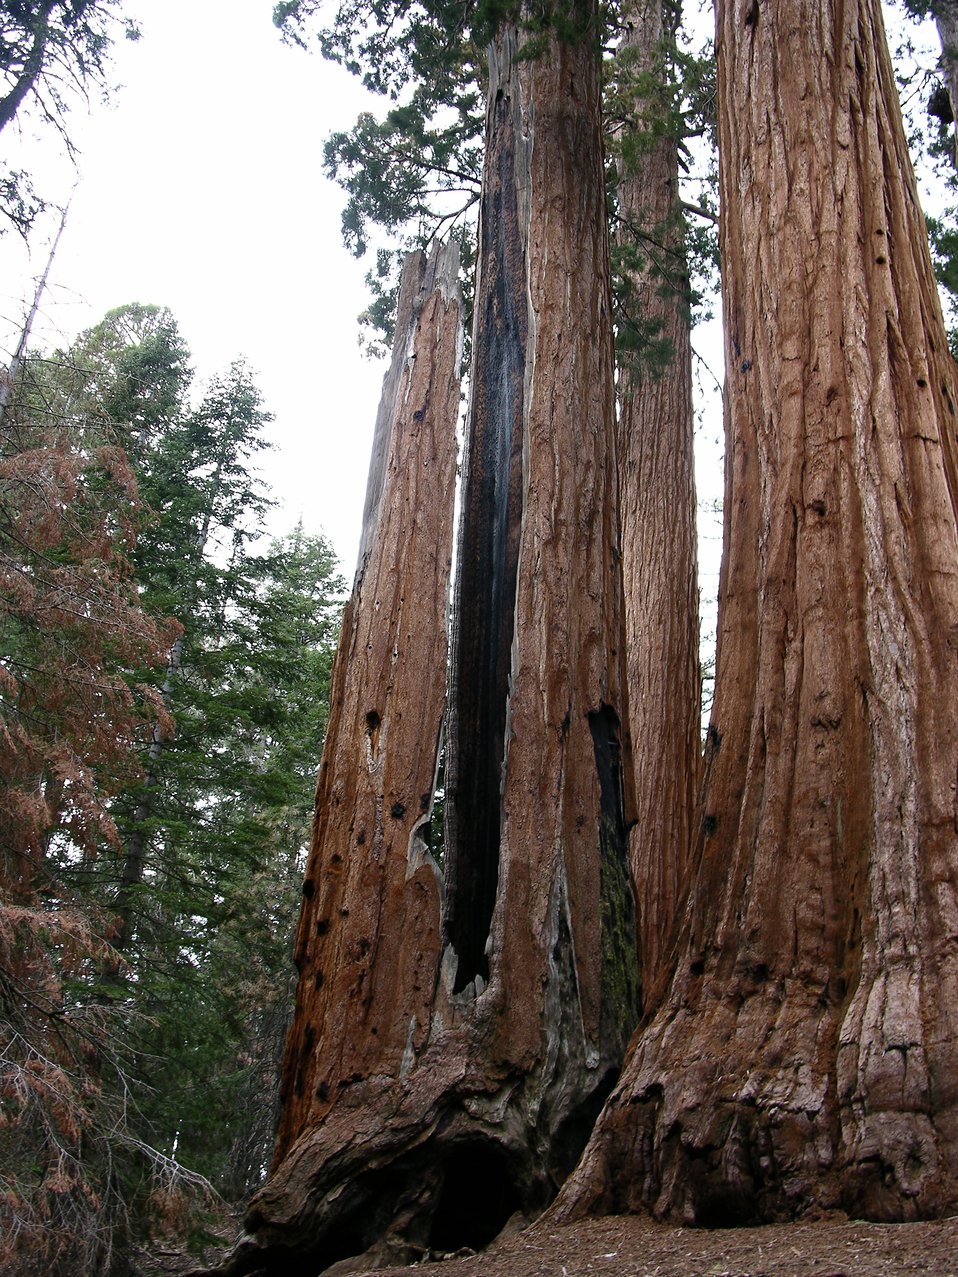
The mighty trunks of giant sequoia trees